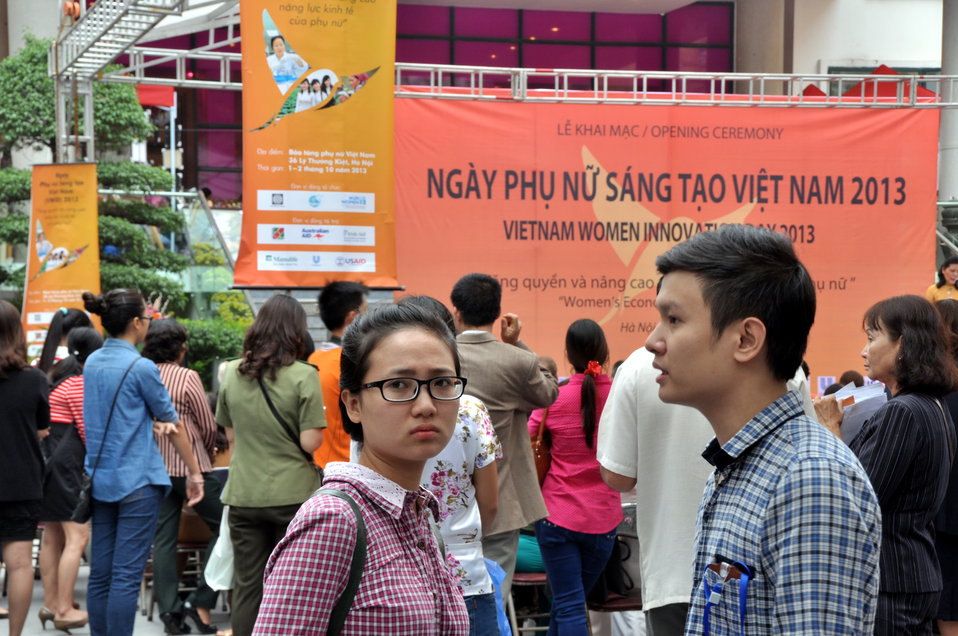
Vietnam Women Innovation Day 2013

Hanoi, October 1, 2013.